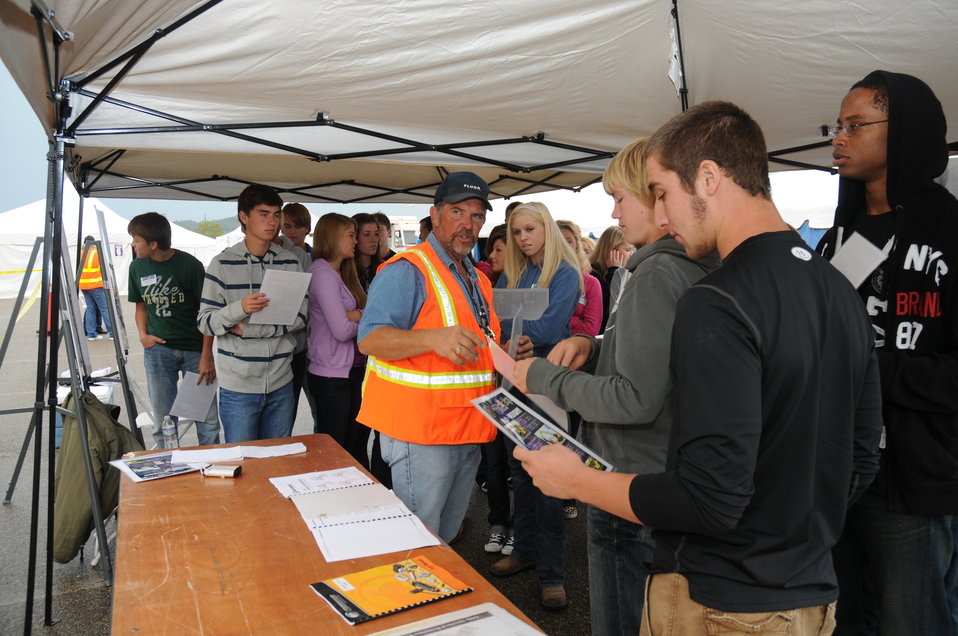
Science Alliance

Tim Williams of Fluor-B&W gives a pop quiz to students for prizes, asking technical questions about demolition
equipment on display.